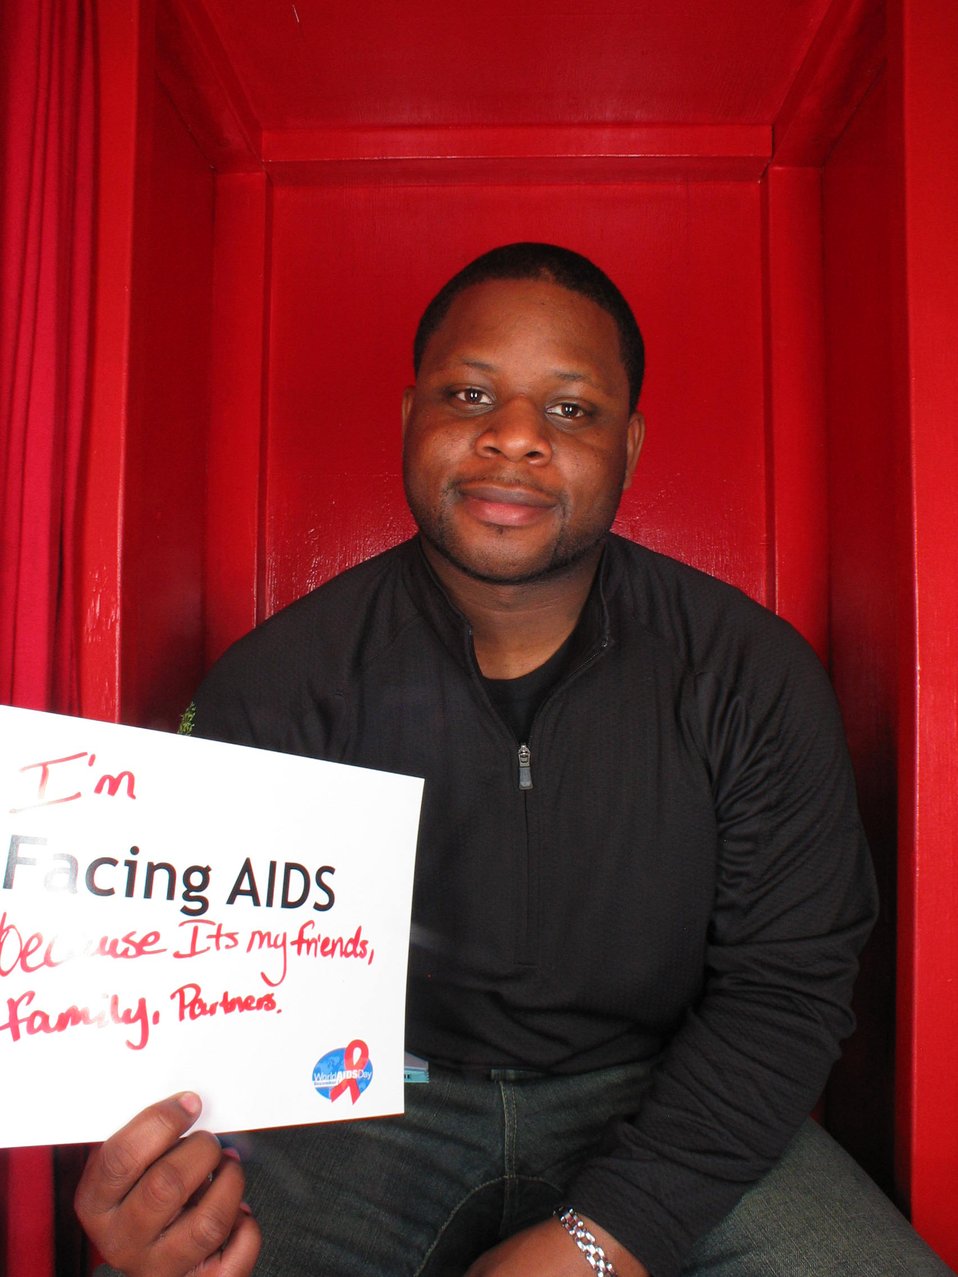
I'm Facing AIDS because its my friends, family and partner